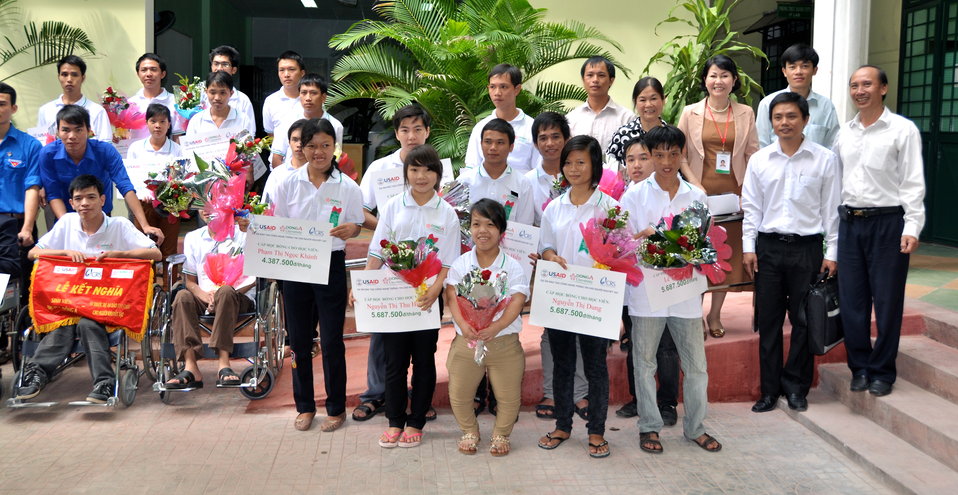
New class of students starts at Dong A Univeristiy with support from USAID and CRS

Photo: @USAIDVietnam
December 3, 2012